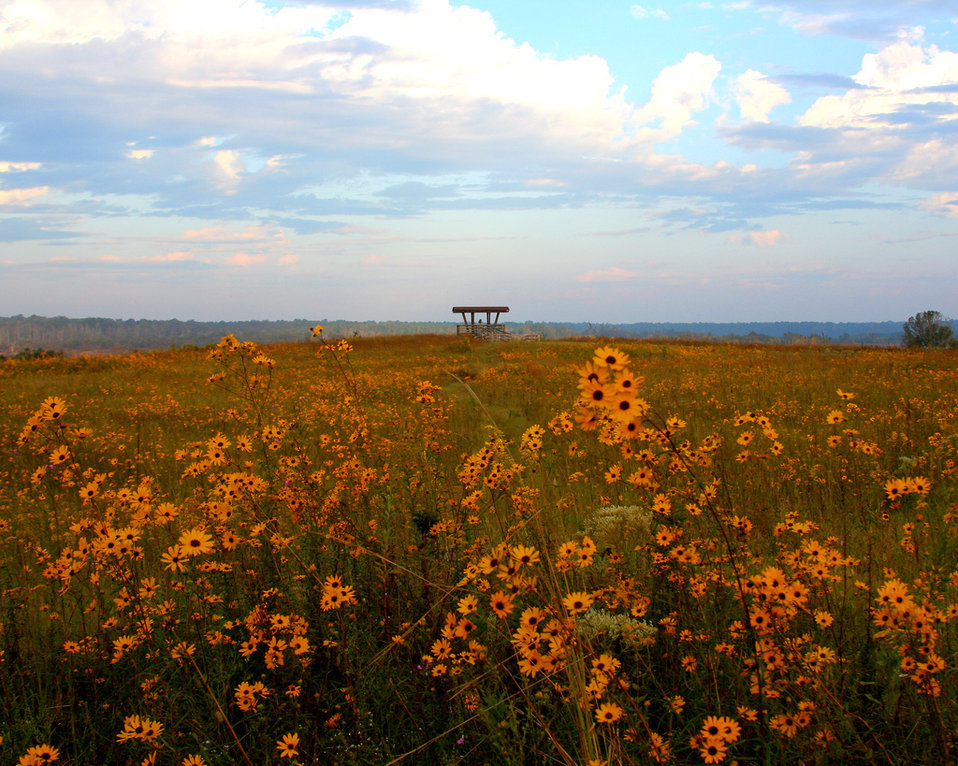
autumn wildflowers

Noxubee National Wildlife Refuge, MS